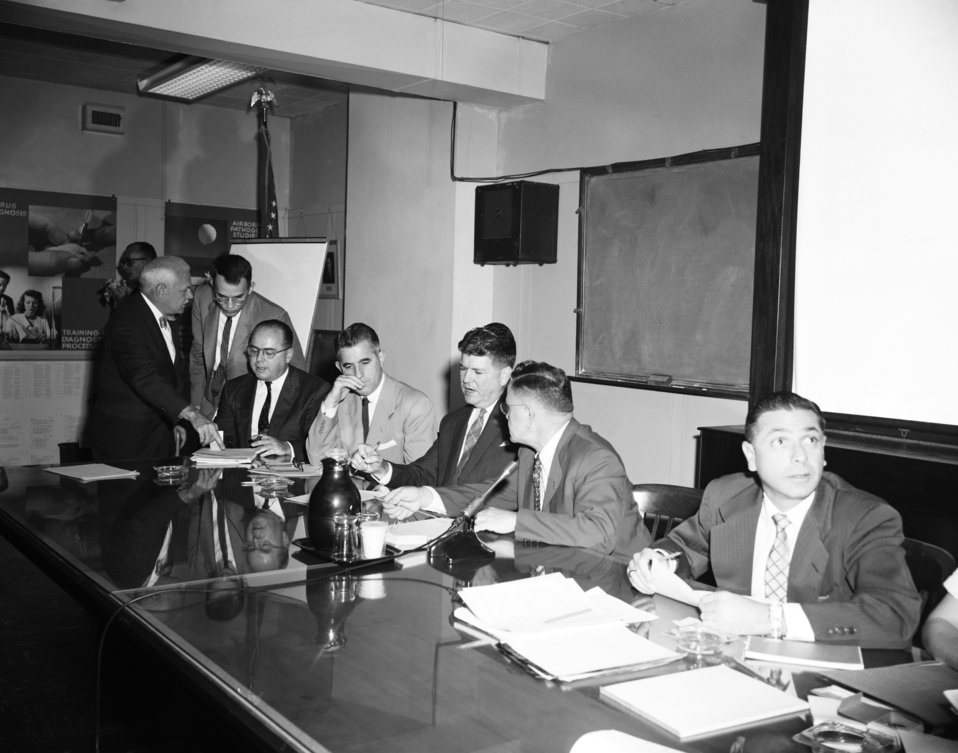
This 1956 photograph depicts a number of CDC officials during a bid opening meeting for the construction of new CDC facilities.